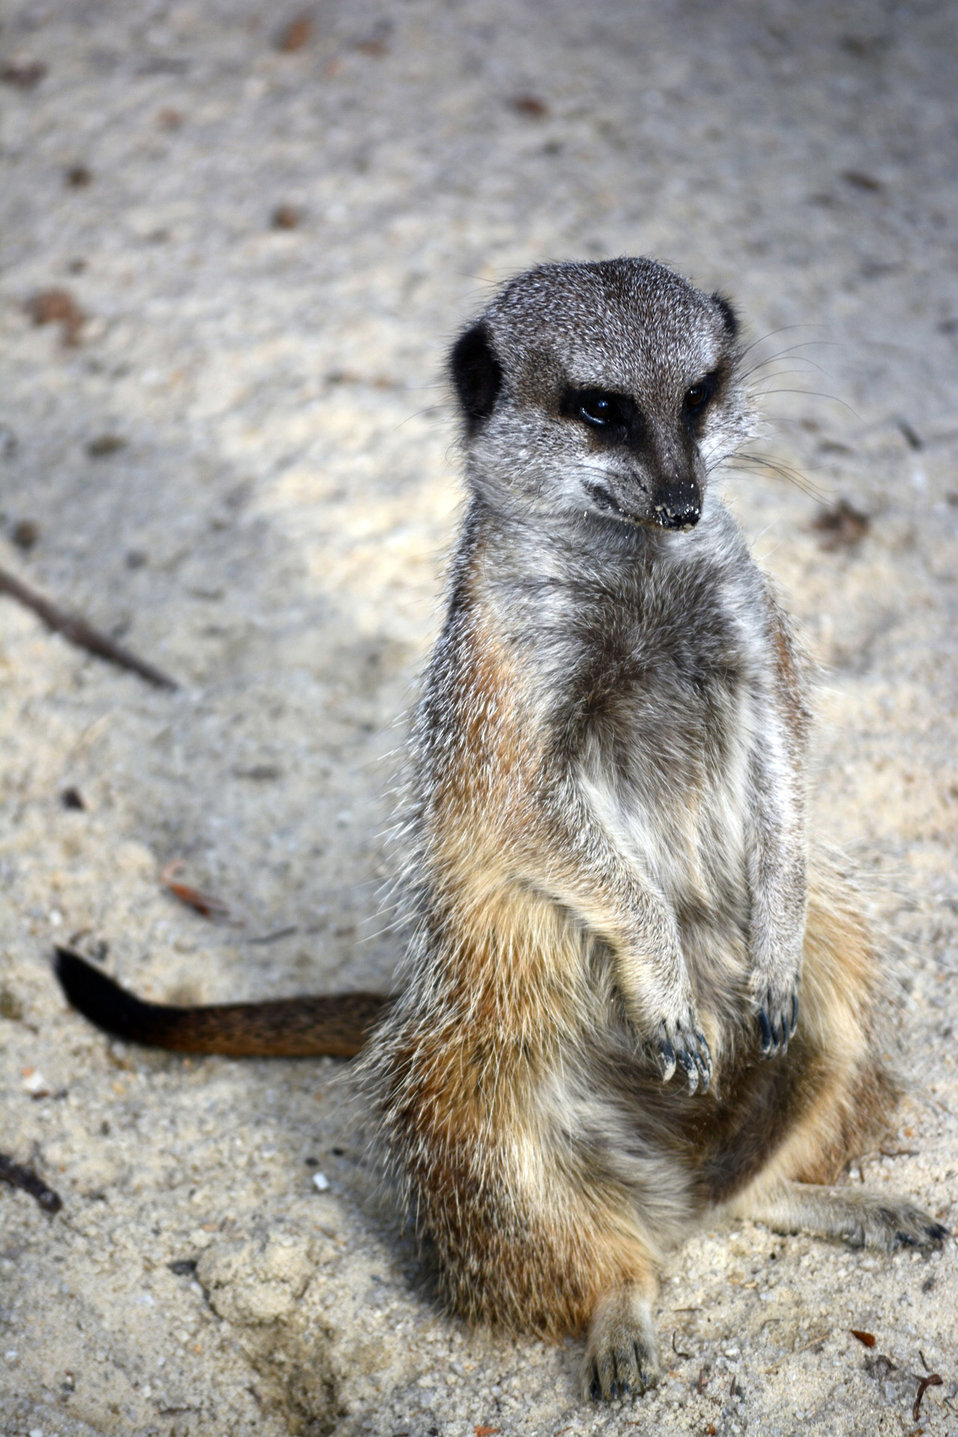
Meerkat posing at werribee park.